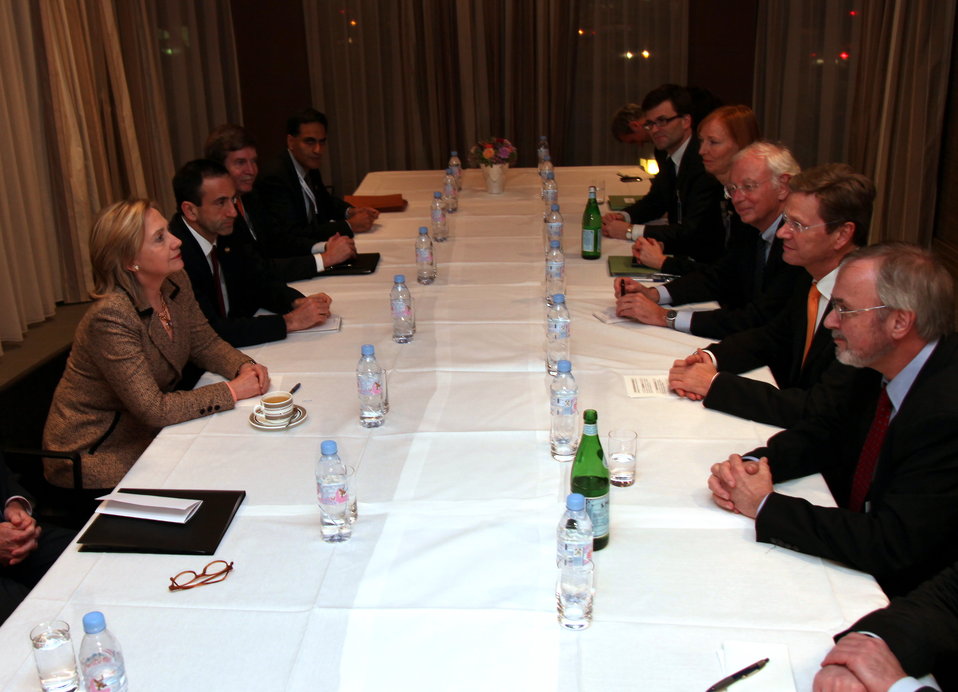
Secretary Clinton Holds a Bilateral Meeting With German Foreign Minister Westerwelle

U.S. Secretary of State Hillary Rodham Clinton, with U.S. Assistant Secretary for European and Eurasian Affairs Philip H. Gordon, left of the Secretary, holds a bilateral meeting German Foreign Minister Guido Westerwelle in Munich, Germany, on February 6, 2011.